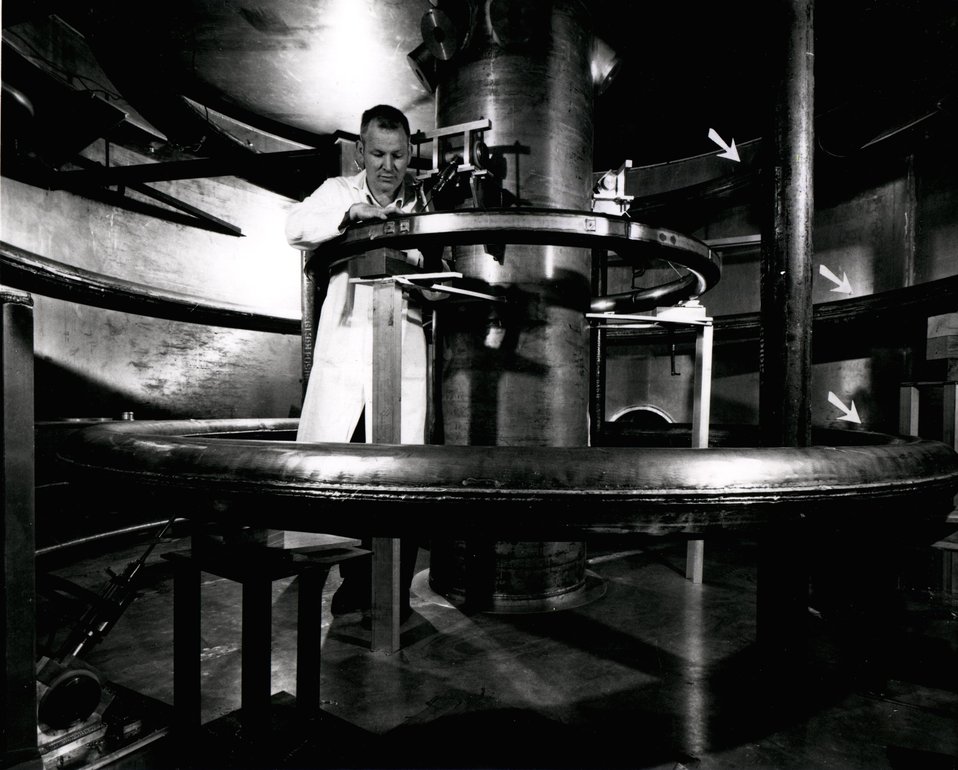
Toroidal device for controlled thermonuclear research. The interior of the Gulf General Atomic's direct current octupole plasma confinement device at La Jolla, California is shown during final construction. c. 1970